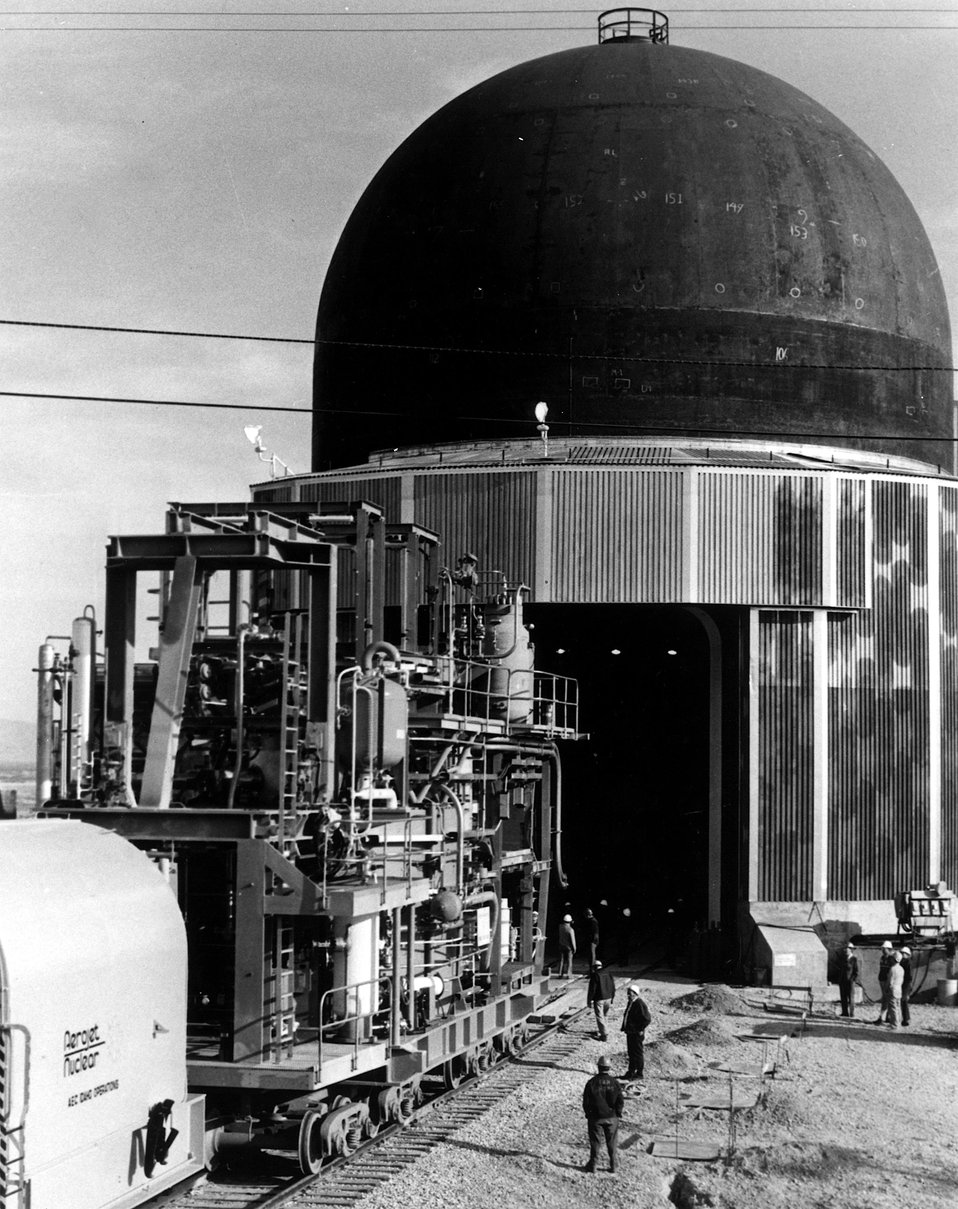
NRTS, Idaho... The LOFT (Loss of Fluid Test) Mobile Test Assembly (MTA) en-route to the LOFT containment building on November 2, 1973 at the U.S. Atomic Energy Commission's National Reactor Testing Station in Idaho. Circa 1974.